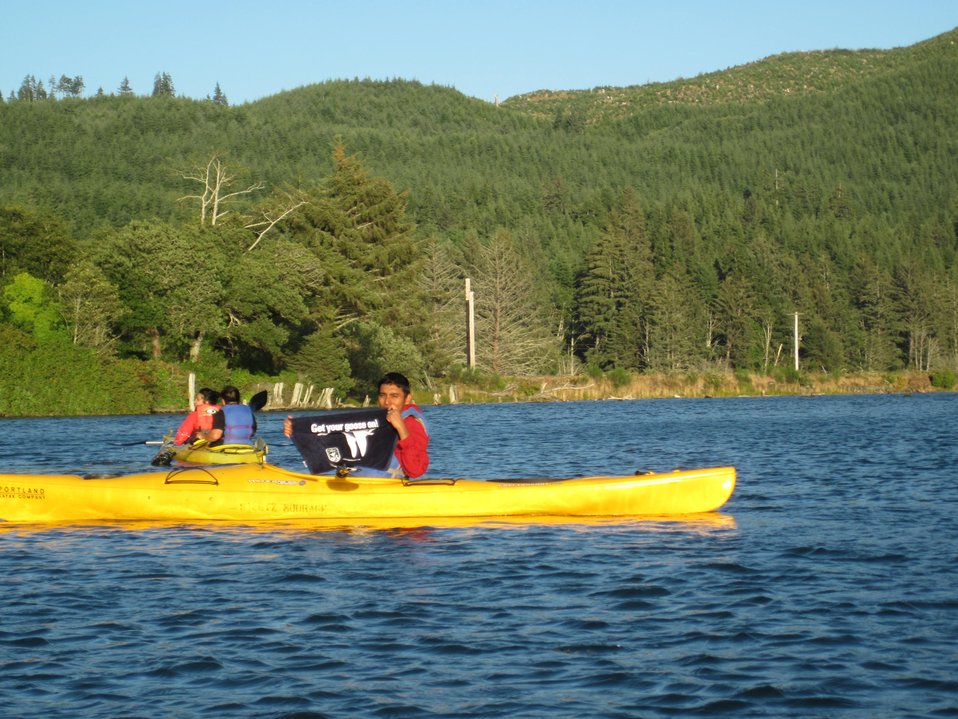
Get Your Goose On! - Siletz Bay Style

GYGO at Siletz Bay NWR!